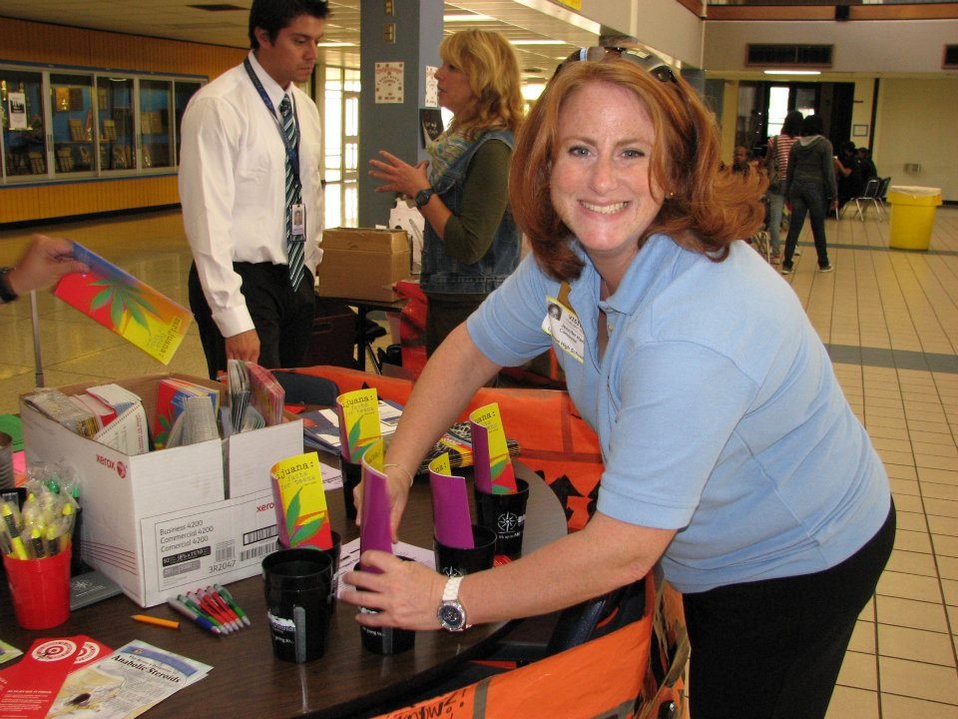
La Marque High School's NDFW event

Giveaways at La Marque High School during NDFW.